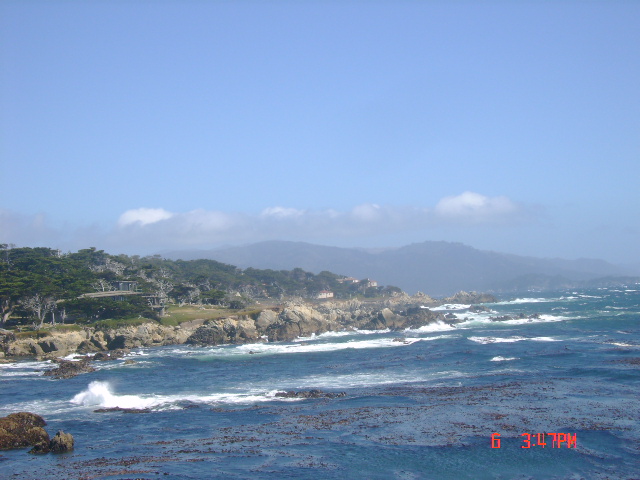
17 Mile Drive. June 2008.